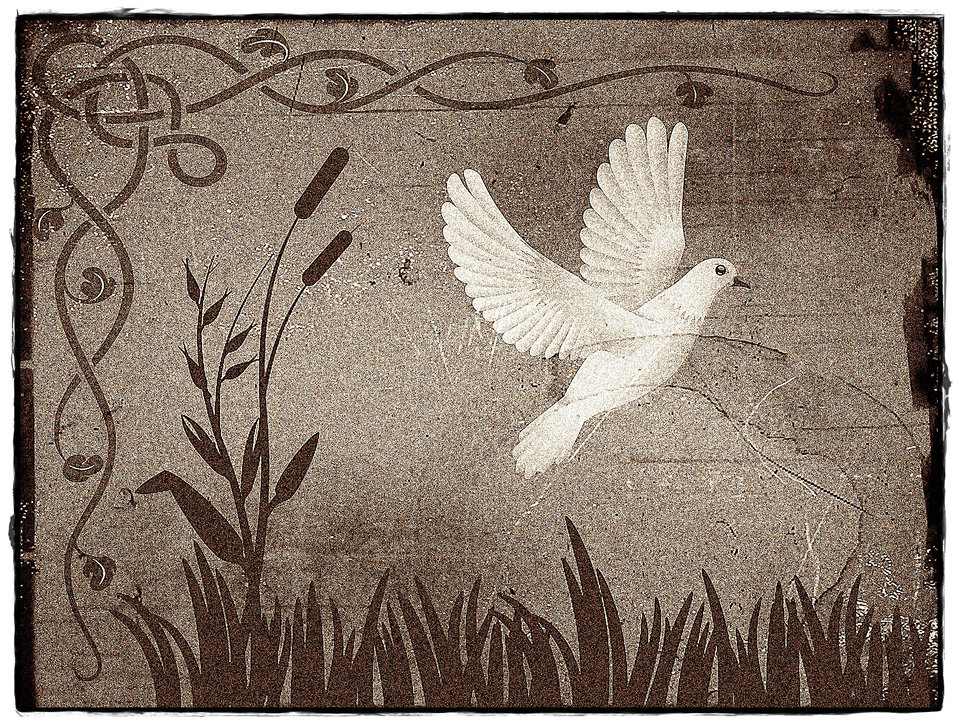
Background 240

Background.